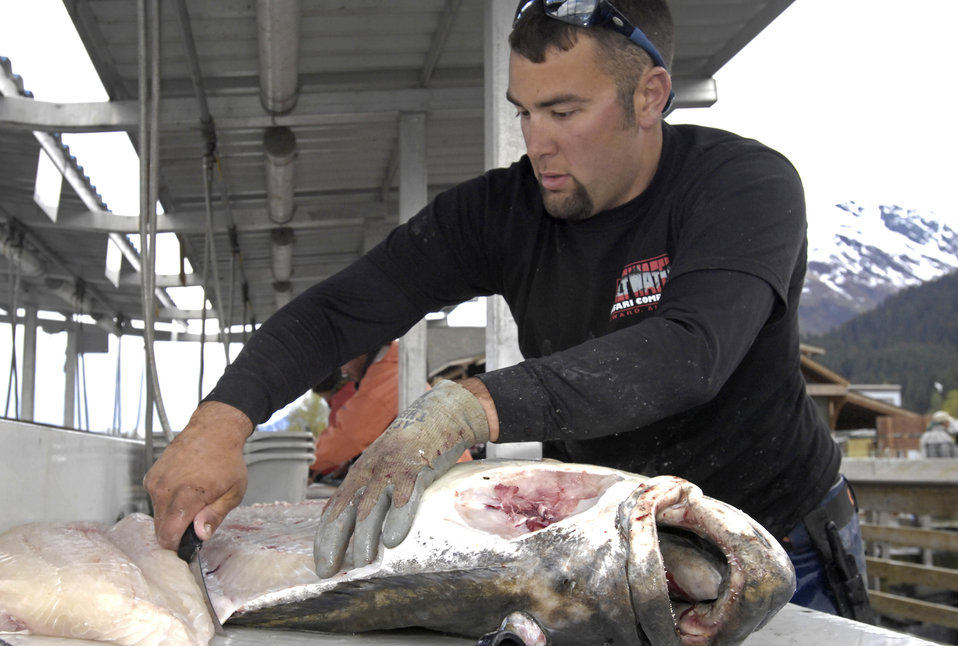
Fishing community gives back to military

Jeff Eide fillets a fish a veteran on his boat caught May 21 in Seward, Alaska. Mr. Eide baited hooks and helped bring fish that the veterans caught on board the boat. The tournament, sponsored by the Armed Services YMCA and the Seward Charter Association, is a free day of halibut charter fishing mainly for veterans of the Iraq and Afghanistan wars.